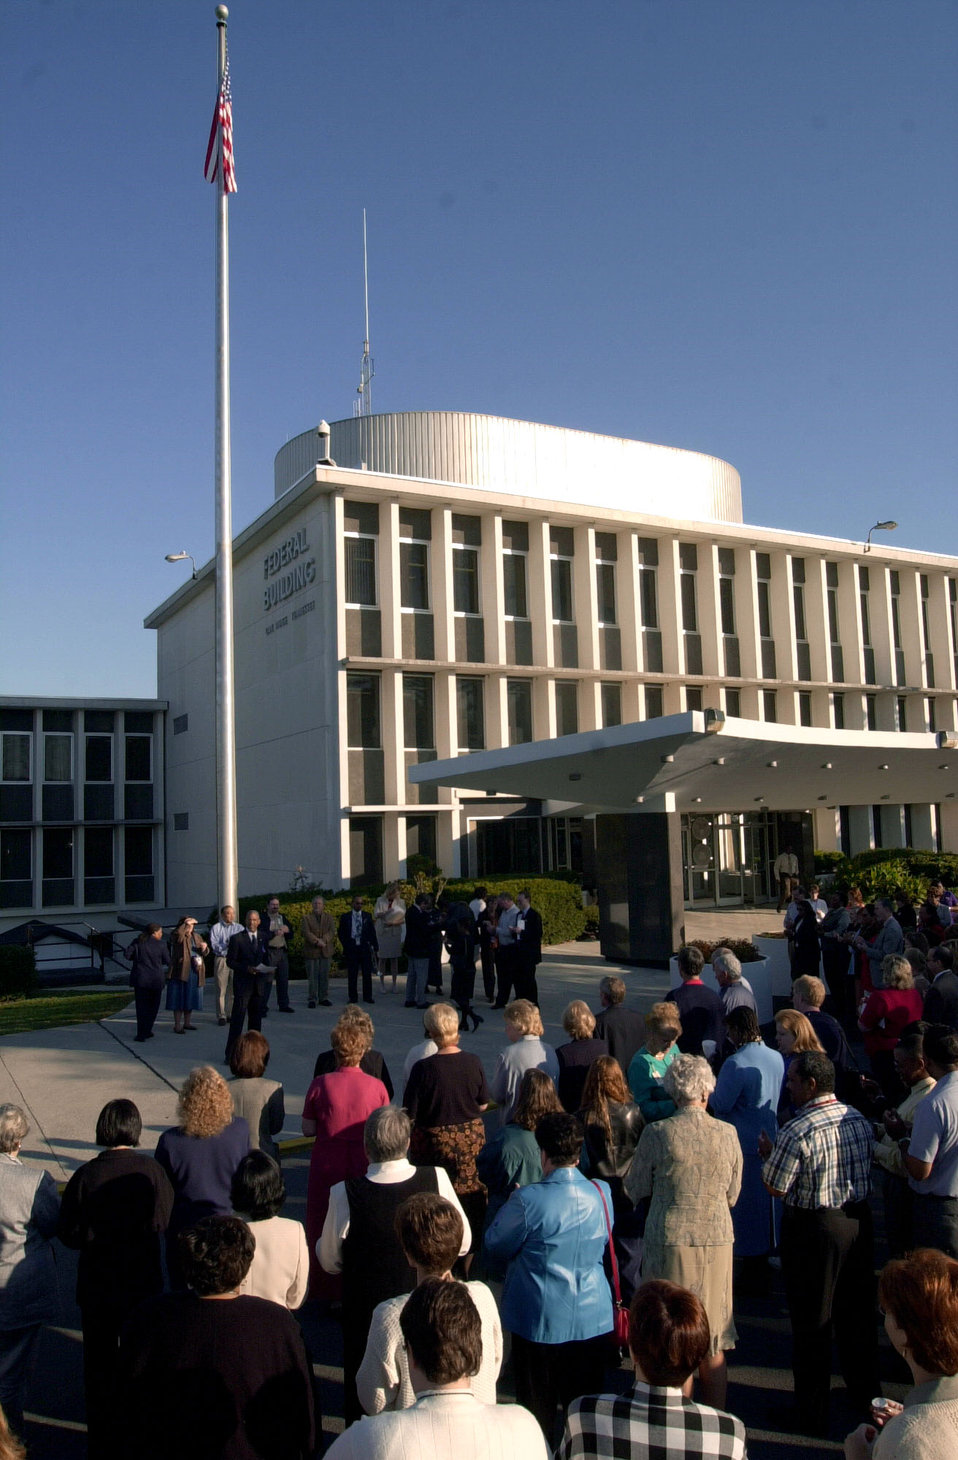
Flag Pole Pray after 911 Federal Building

01-249-2270 DOE photo by Lynn Freeny
Oak Ridge Tennessee 10/2/2001